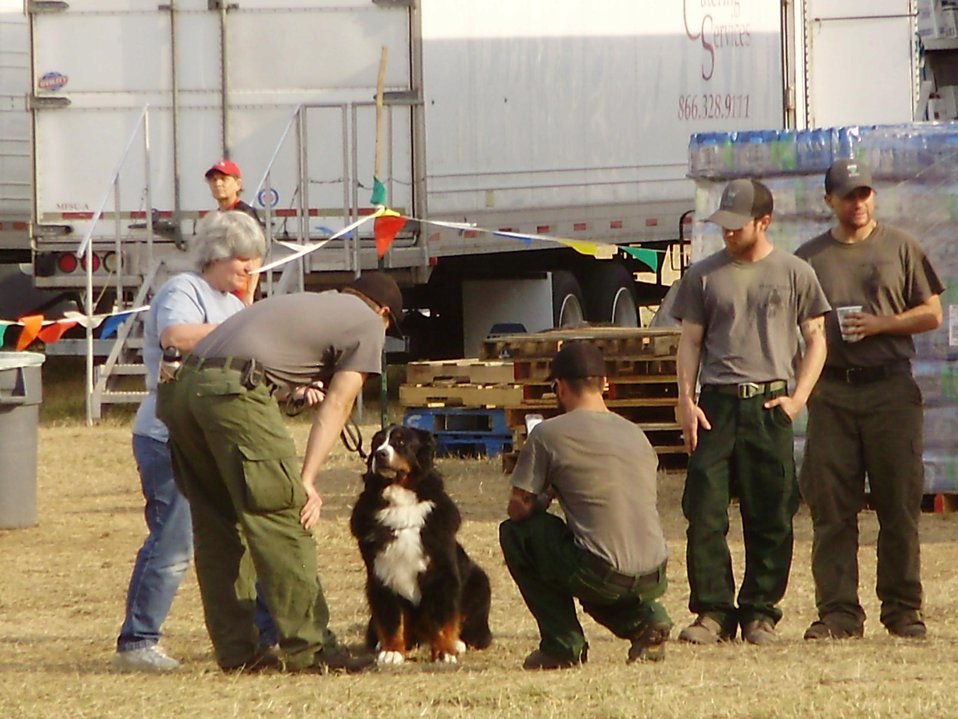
Therapy Dogs visit firefighters at the Whiskey Complex Fire. Therapy dogs are trained to provide affection and comfort to people in hospitals, retirement homes, nursing homes, schools, hospices, disaster areas, and to people with learning difficulties. The interaction between human and animal greatly reduces stress and anxiety levels of individuals in a dangerous environment, such as a wildfire.